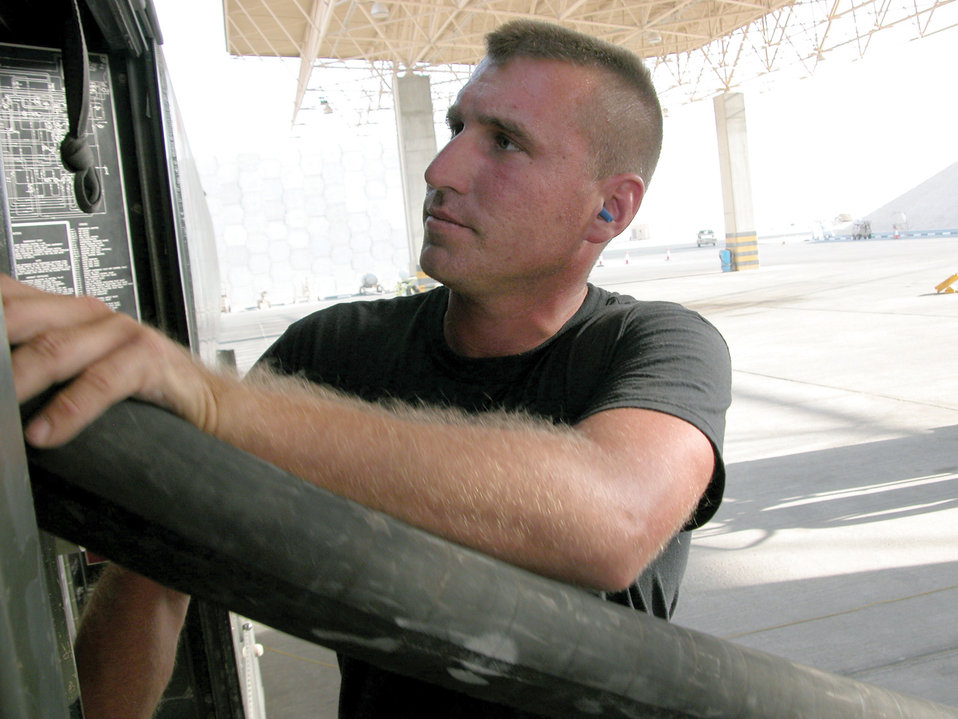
POL Airmen fuel the wing

SOUTHWEST ASIA -- Airman 1st Class Jason Joblonowski puts a hose back on a fuel truck at a forward-deployed location. He is from Luke Air Force Base, Ariz.